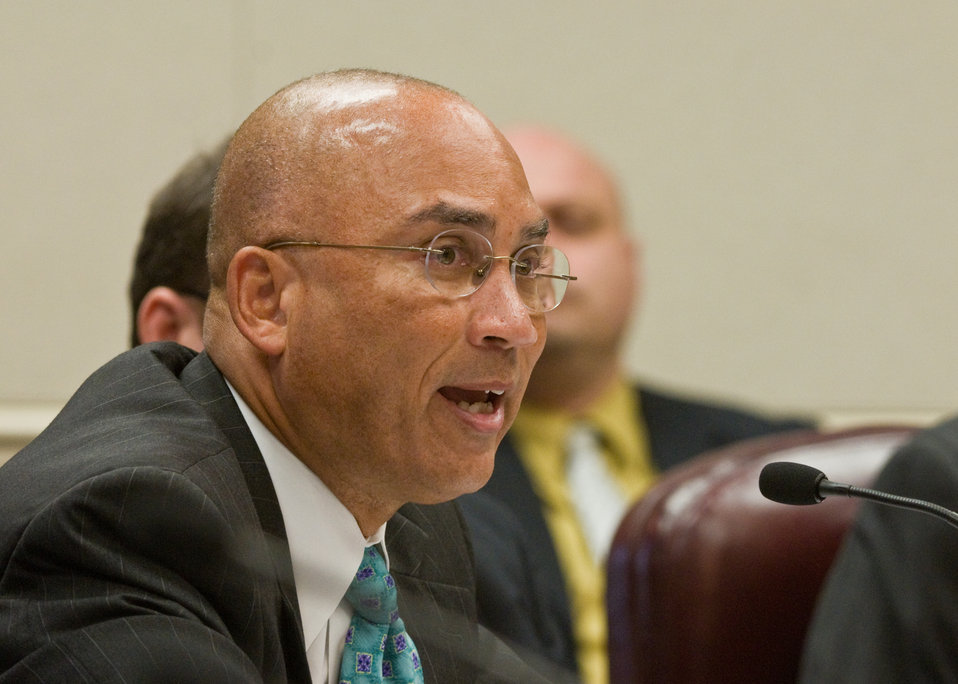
Ted Austell, Boeing, Vice President, Government Operations, Executive/Legislative & Regulatory Affairs gave an aviation industry’s perspective to the United States Department of Agriculture, aviation and biofuel industry executives at the 'Farm to Fly, Sustainable Aviation Biofuel Roundtable” at the United States Department of Agriculture in Washington, DC, Wednesday, July 14, 2010. Boeing is dedicated to assisting in the development of the Biofuels Goals of the Renewable Fuels Standard.
USDA Photo 10di1441-011.